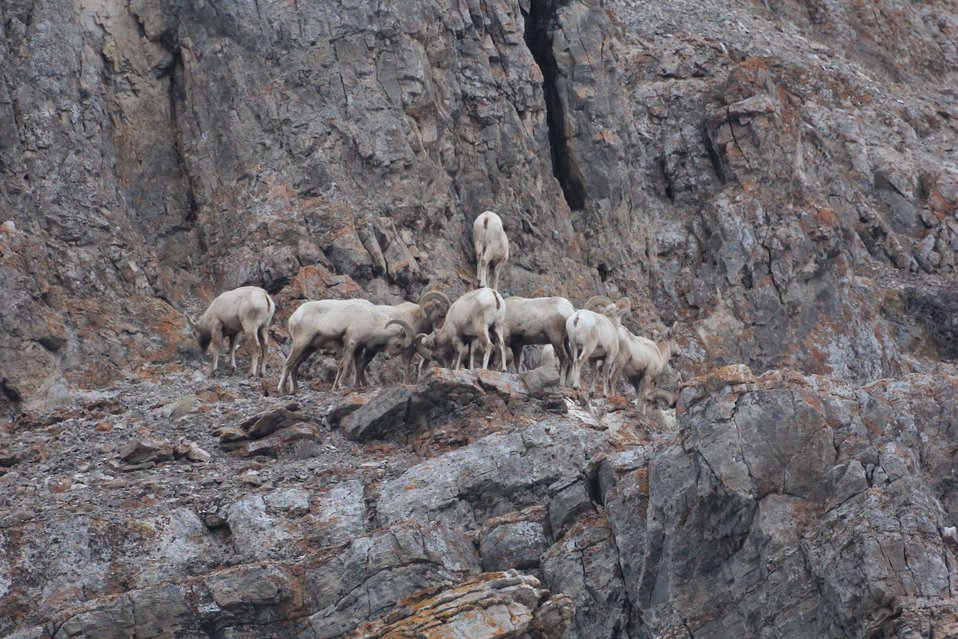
On the Rocks

A group of bighorn sheep cluster on the rocky cliffs of Miller Butte, which offer protection from predators.

Credit: USFWS / Ann Hough, National Elk Refuge volunteer